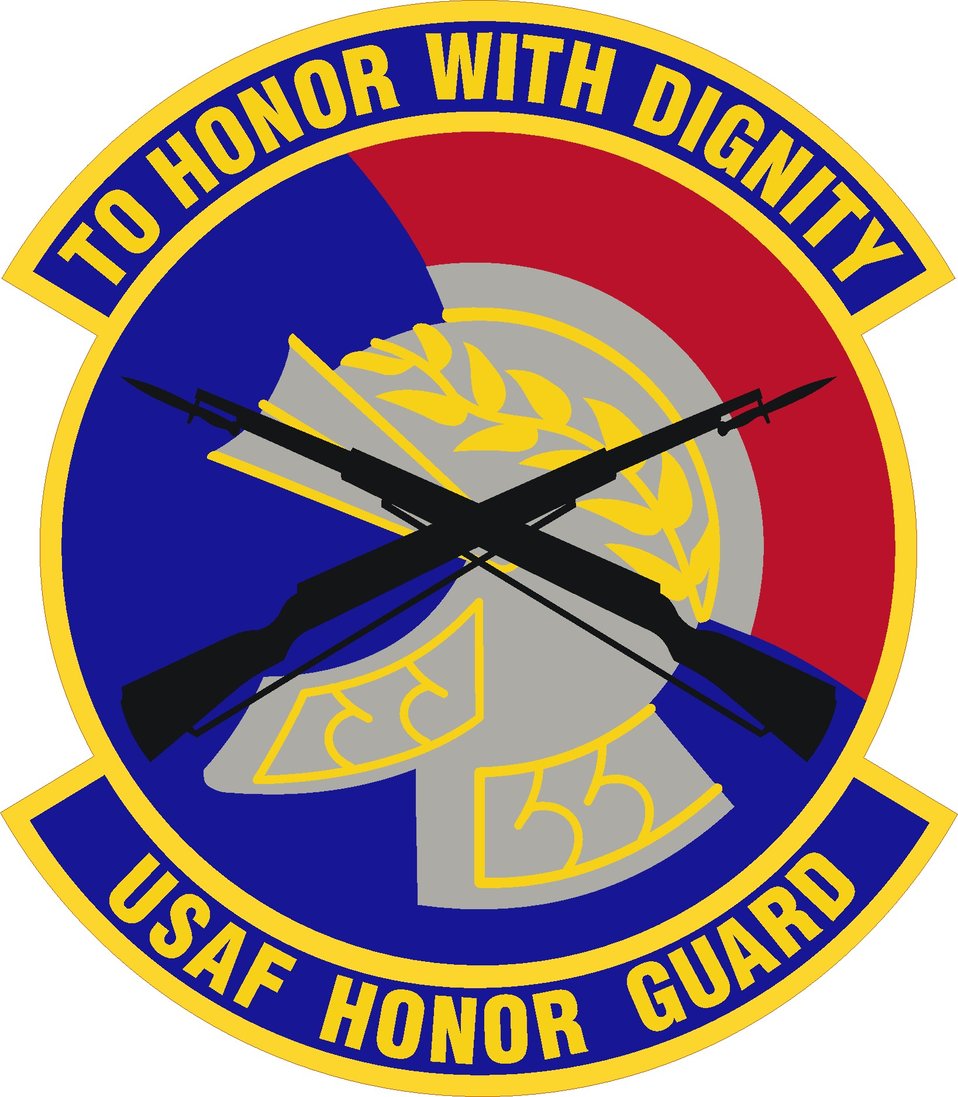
Honor Guard Shield

Air Force Honor Guard Shield.